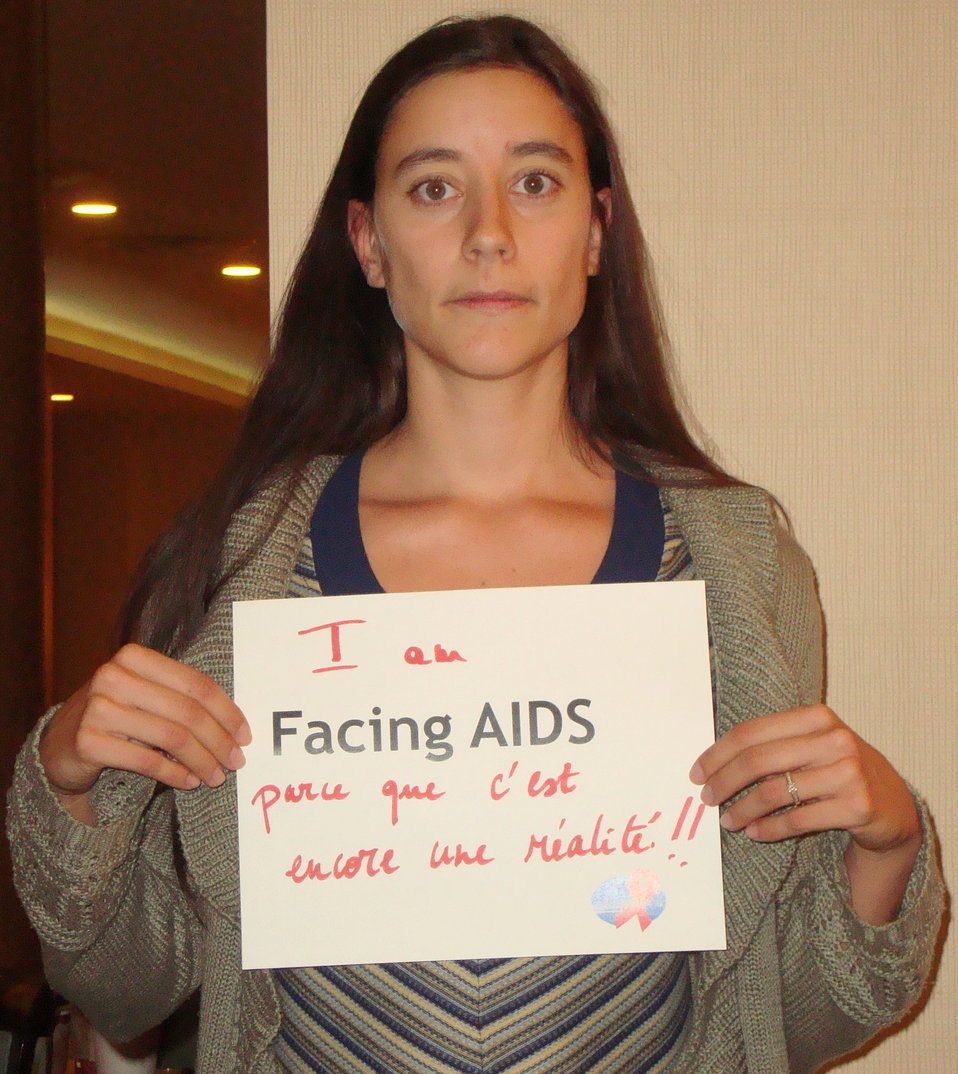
FacingAIDSCampaign 035